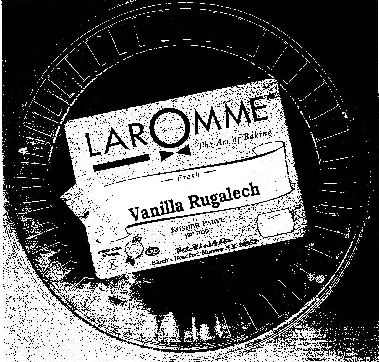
RECALLED – Rugelach 1

January 6, 2011 – Product Recall – Bloch’S Best Inc Issues Allergy Alert On Undeclared Eggs In Laromme Brand Vanilla Rugelach In 14 Oz. Round Containers.